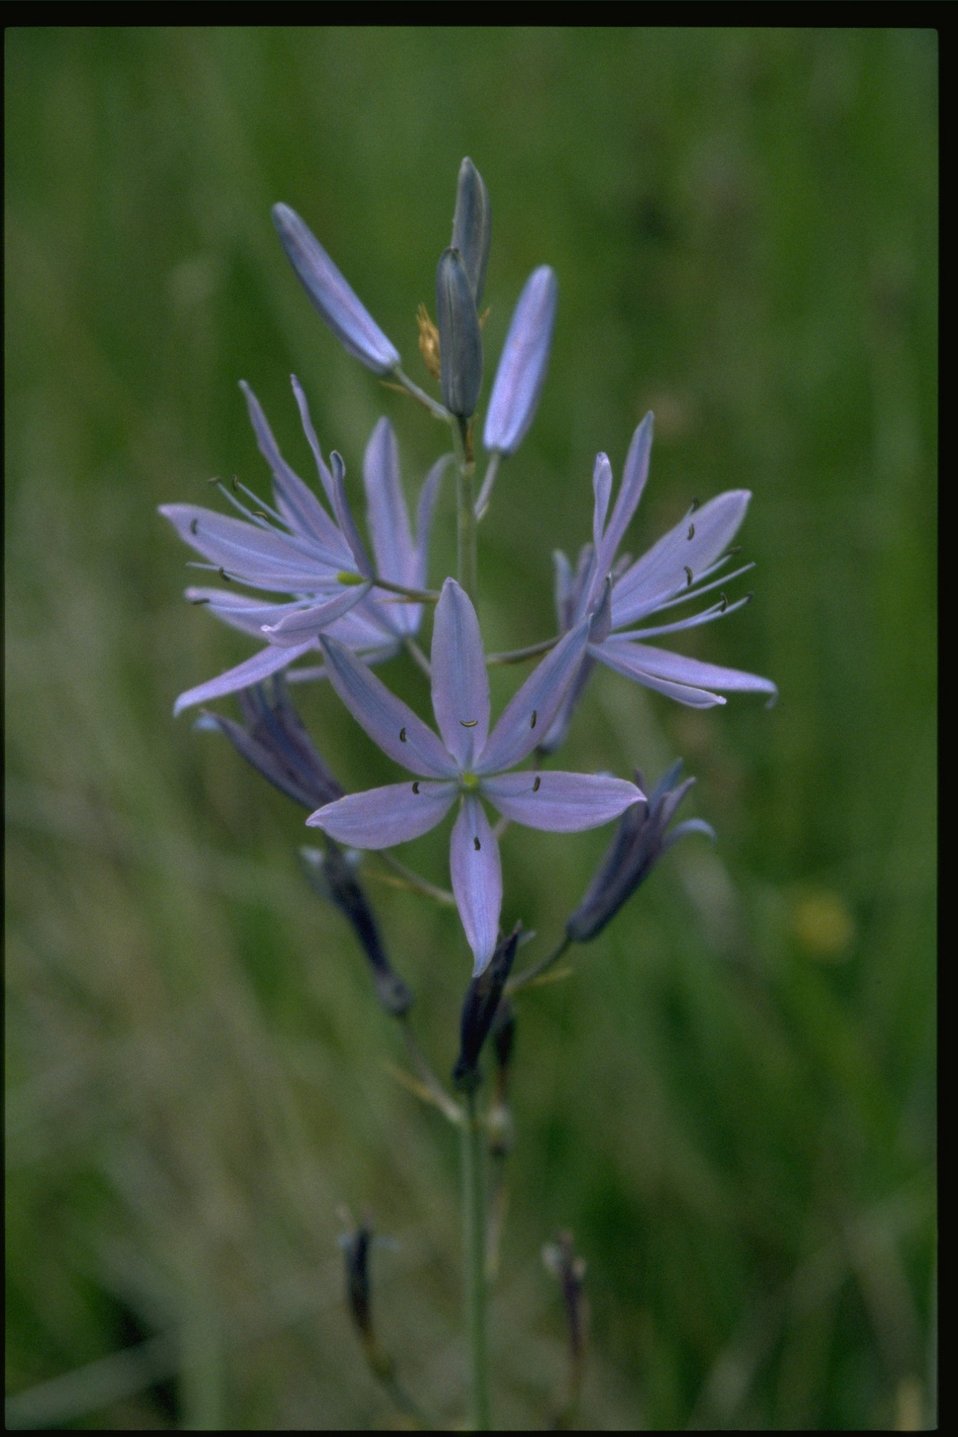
Closeup shot of Camassia quamash.